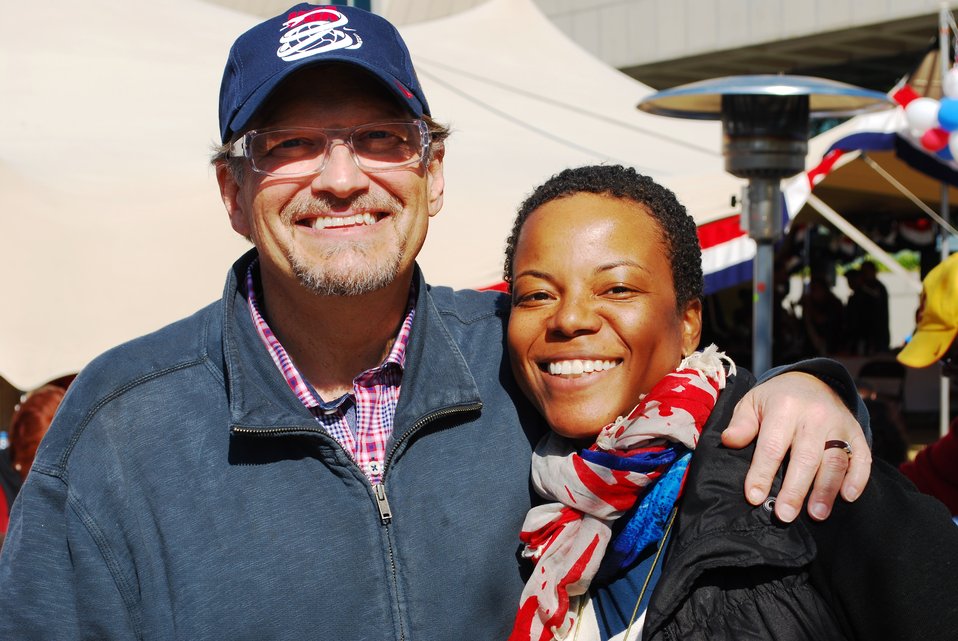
Drew Carey and Allana Finley Smile for the Camera

Drew Carey smiles for a photo with local U.S. citizen Allana Finley at the Team USA pep rally before the U.S. vs. Algeria World Cup match on June 23, 2010, in Pretoria, South Africa.